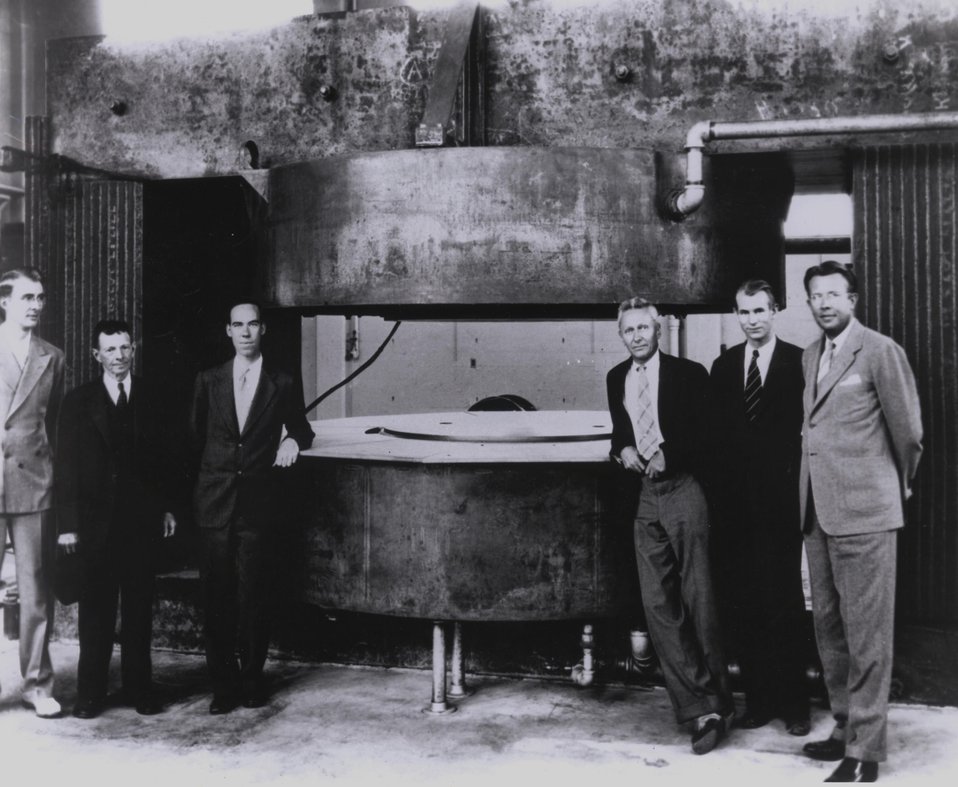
The 60-inch cyclotron at the U of California's Lawrence Radiation Lab soon after its completion in mid-1939.Key figures in the development of the cyclotron. Left to right: Dr. Luis W. Alvarez, Dr. W.D. Coolidge, William Brobeck, Dr. Donald Cooksey, Dr Edwin McMillan, and E.O. Lawrence.